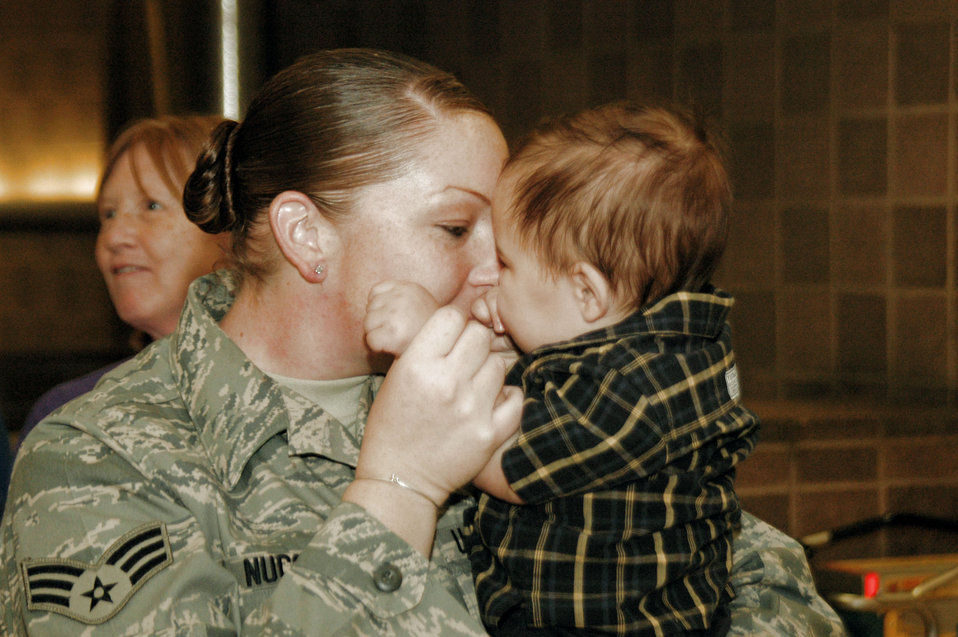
Welcome home

A member of the 433rd Civil Engineer Squadron gets a kiss from her son after spending six months in Afghanistan Sept. 22 in San Antonio. Family and friends met them at the San Antonio Airport with banners and cheers. The Airmen built and repaired structures at Bagram Airfield, Afghanistan, and forward operating locations. They installed air-conditioning units for Soldiers and brought older buildings up to U.S. military construction codes.